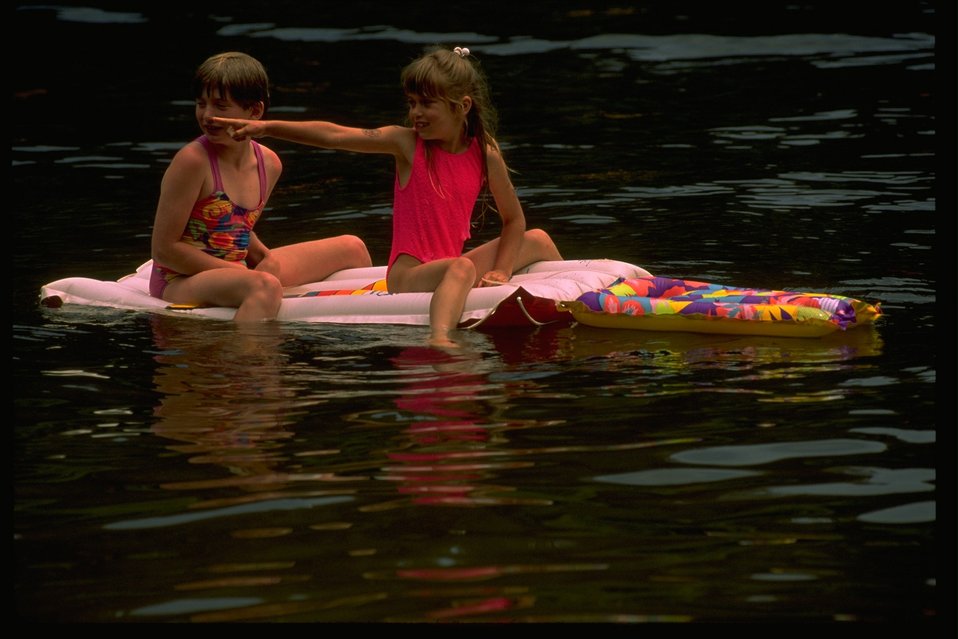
Using floating matresses at Loon Lake.